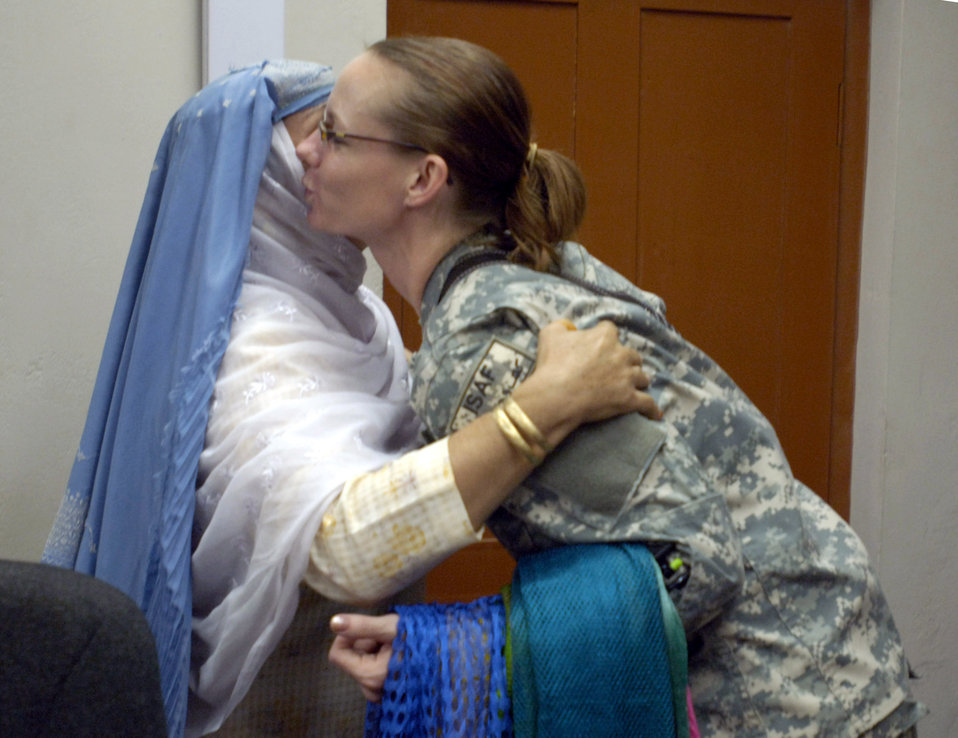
American, Afghan women join together for tea, discussion

Capt. Heather Kekic shares a traditional greeting with an Afghan woman during an afternoon tea Sept. 5 at Forward Operating Base Mehtar Lam, Afghanistan. Female Airmen and Soldiers assigned to the Laghman Provincial Reconstruction Team hosted the tea for influential Afghan women living throughout Afghanistan's Laghman province. The tea provides an opportunity for PRT members to educate the local women on humanitarian and security programs in place for them and their communities. Captain Kekic, the PRT's public affairs and information officer, is deployed from Randolph Air Force Base, Texas.